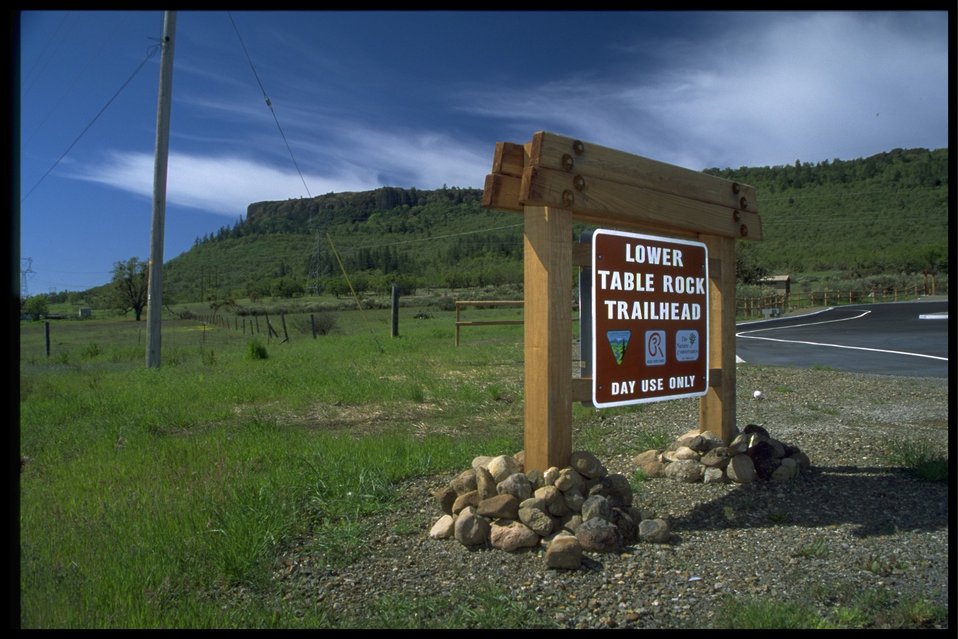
Lower Table Rock trail sign.